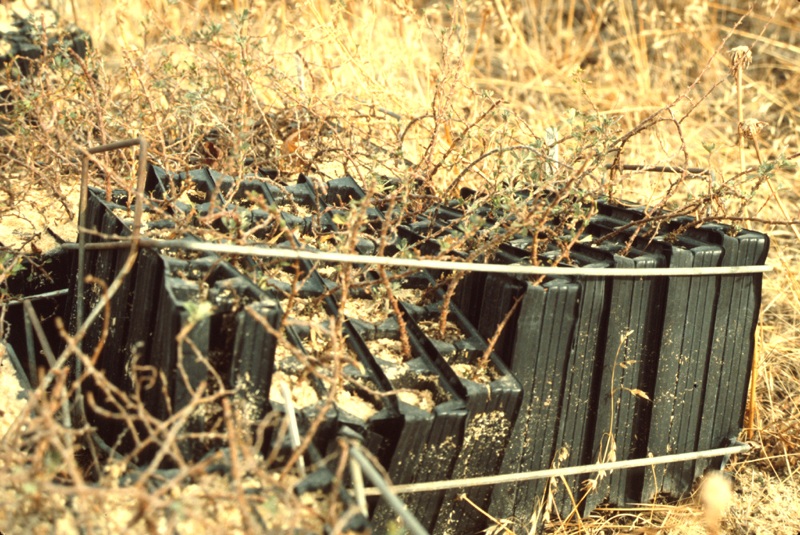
Sage Brush Rabbit Brush Study Site Range Restoration Project